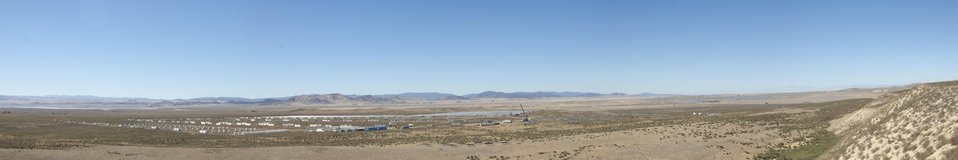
California Valley Solar Ranch, Carrizo Plain